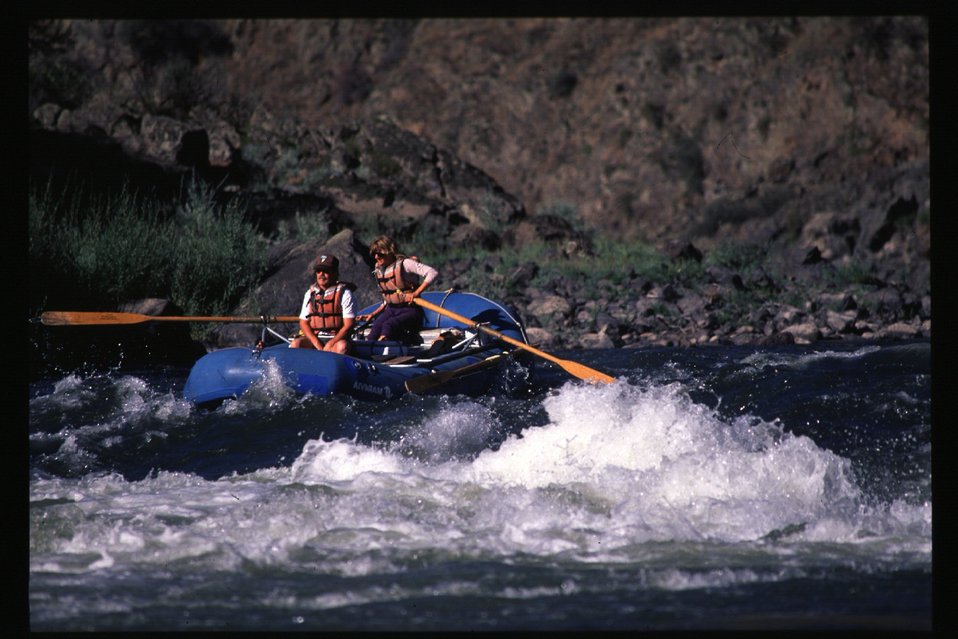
White water rafting Lower Salmon River Cottonwood Field Office UCSC Upper Columbia Salmon Clearwater District